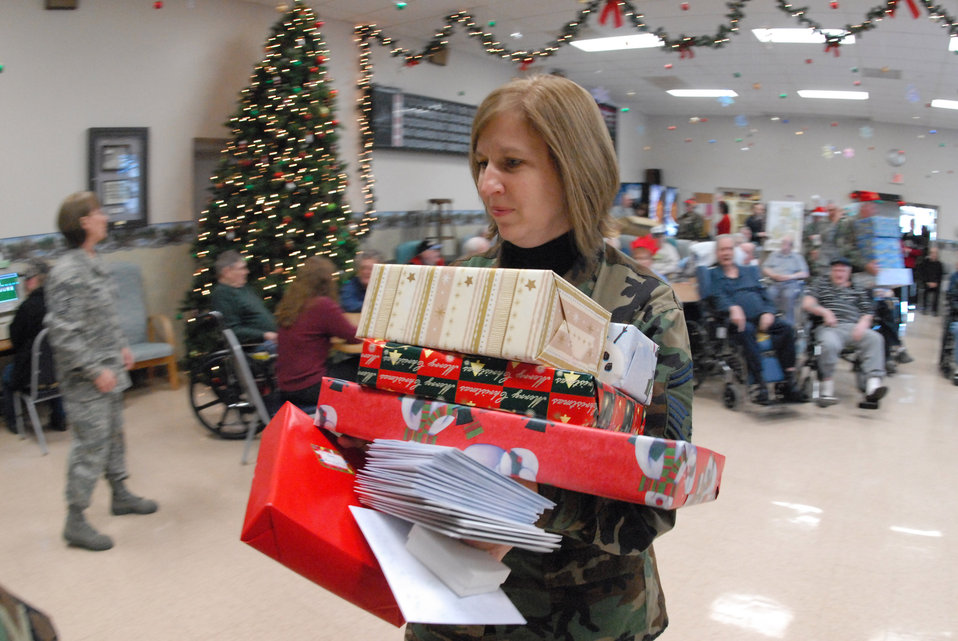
Airmen deliver Christmas

Senior Master Sgt. Sandi Renville carries Christmas gifts at the North Dakota Veteran's Nursing Home Dec. 10 in Lisbon, N.D. The gifts are given to veterans at the nursing home by the North Dakota Air and Army National Guard each December using funds raised through personal donations given by the North Dakota National Guard members. Sergeant Renville is assigned to the 119th Wing.